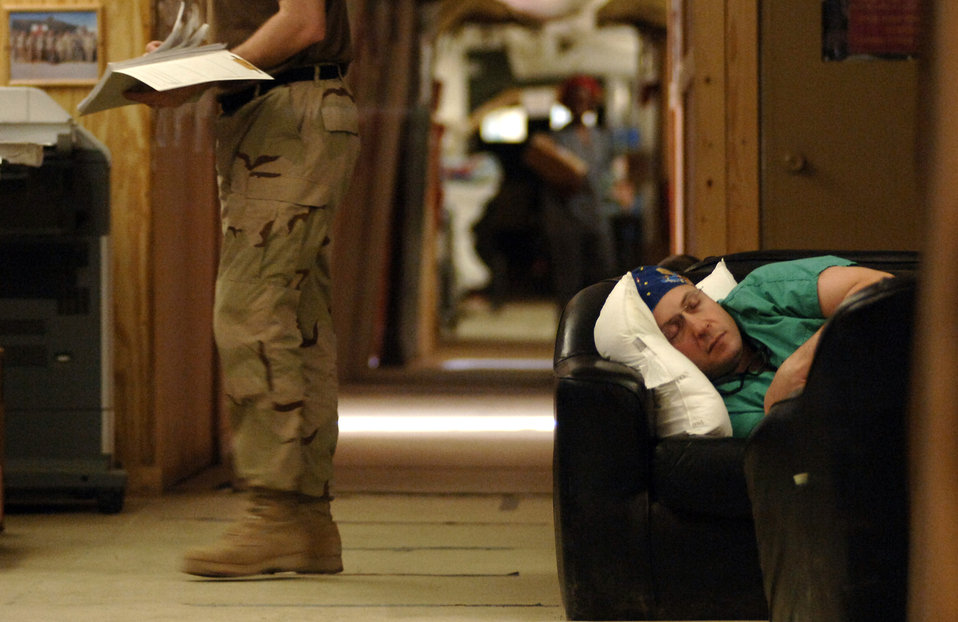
Taking advantage of down time

Cardio-thoracic surgeon Lt. Col. (Dr.) Jerry Pratt takes advantage of down time Feb. 21 in a room adjacent to the emergency room in the Air Force Theater Hospital at Balad Air Base, Iraq. The hospital owns a survival rate of 98 percent.